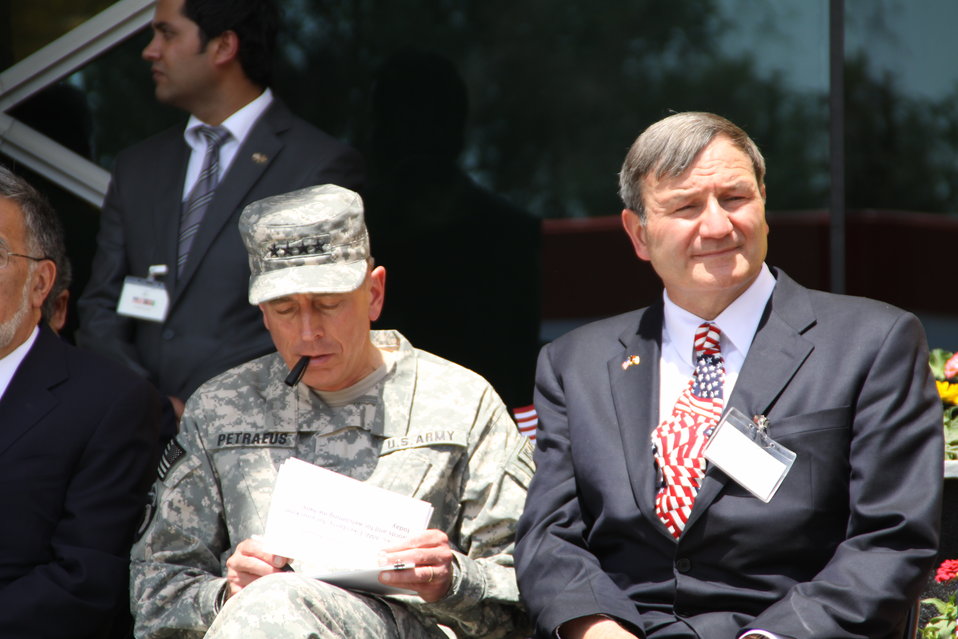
Kabul Official July 4th Celebration